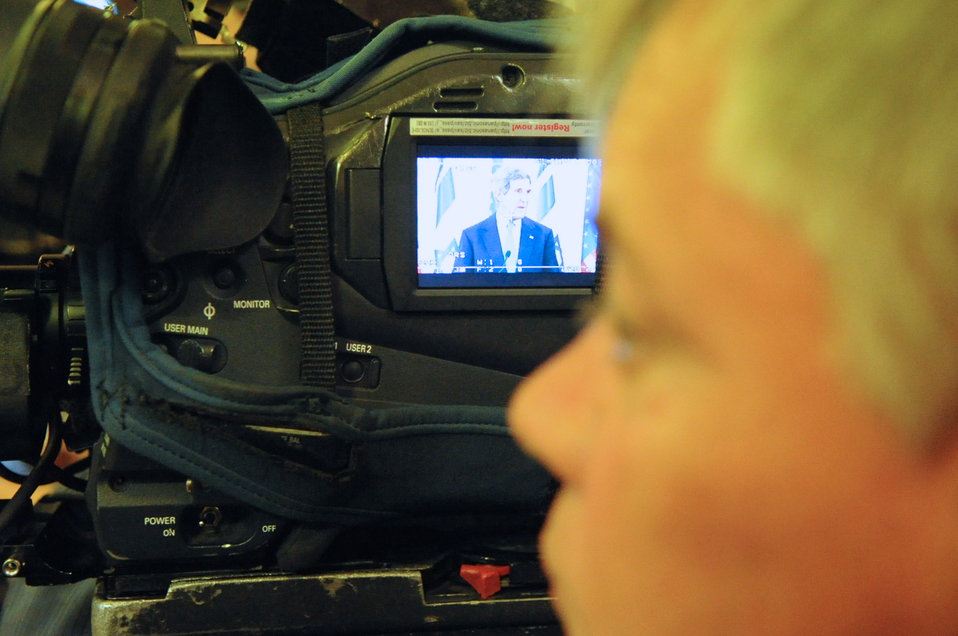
Pool Videographer Captures Secretary Kerry's Jerusalem Statement

A Fox News cameraman shoots video of a statement made by U.S. Secretary of State John Kerry, as part of a pool arrangement with U.S. television networks, in Jerusalem on September 15, 2013.